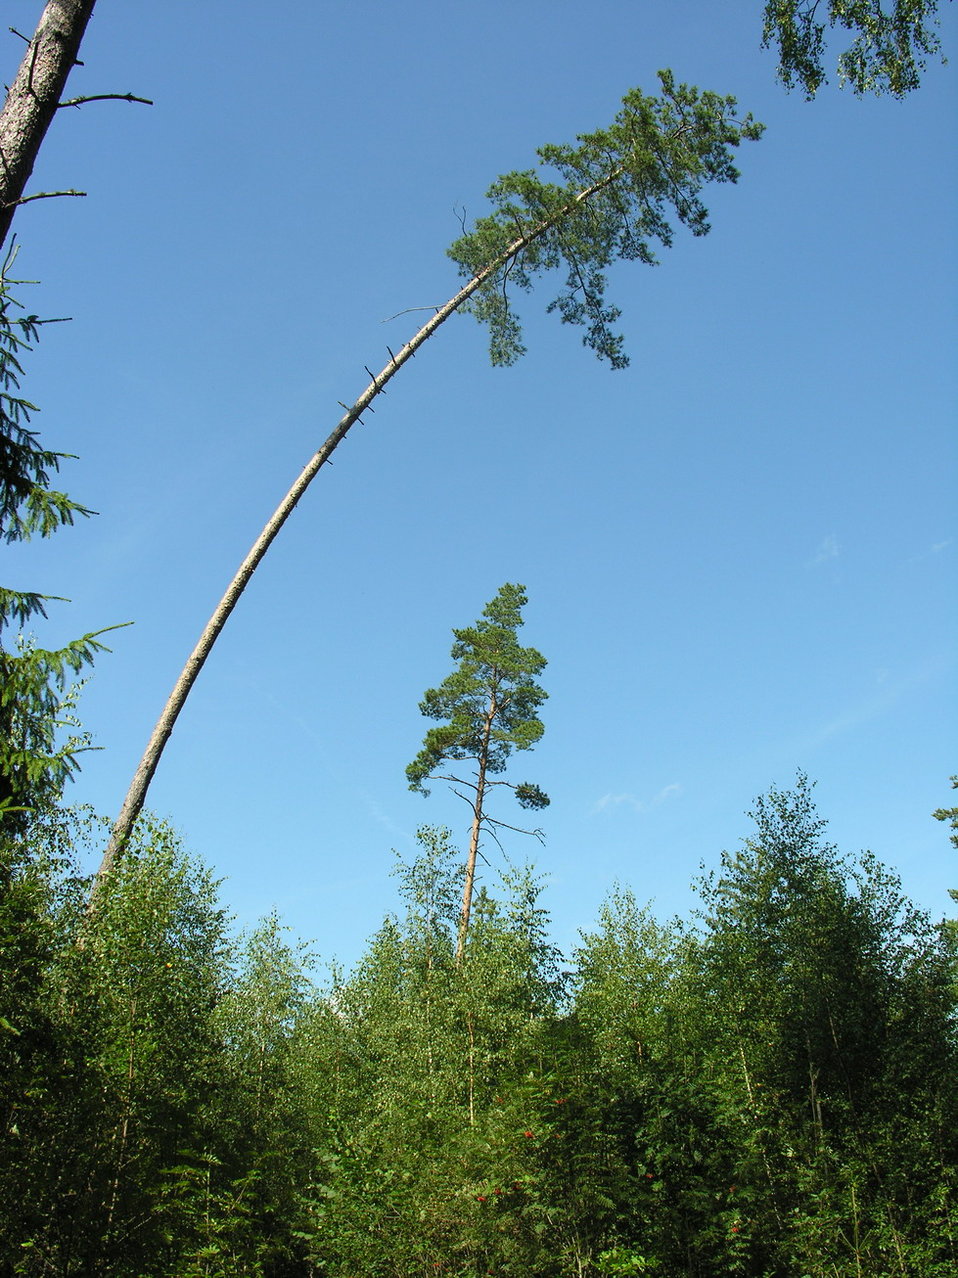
Lietuvių: Išretintas miškas Fotografavo Algirdas Mažeikių raj., Ubagyno miške, 2005 m., rugpjūčio 23 d.